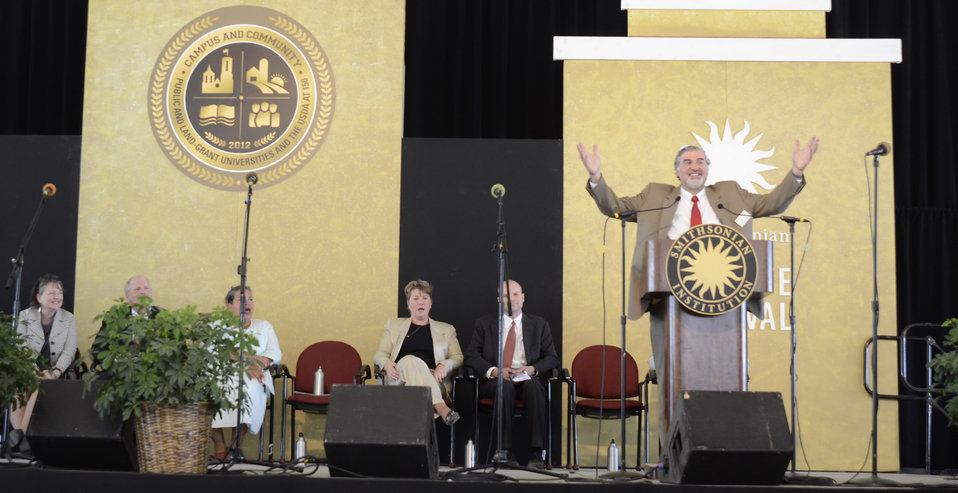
Agriculture Deputy Secretary Kathleen Merrigan (far left) listens to a guest speaker at the opening ceremony for the 2012 Smithsonian Folklife Festival in Washington, D.C. on Wednesday, June 27, 2012. This year’s festival features three themes; “Creativity and Crisis” celebrates the 25th anniversary of the AIDS Memorial Quilt, “Citified,” explores the rich culture and community of neighborhoods east of the Anacostia, and the third “Campus and Community” celebrates 150 years of USDA and the Land-Grant university system.